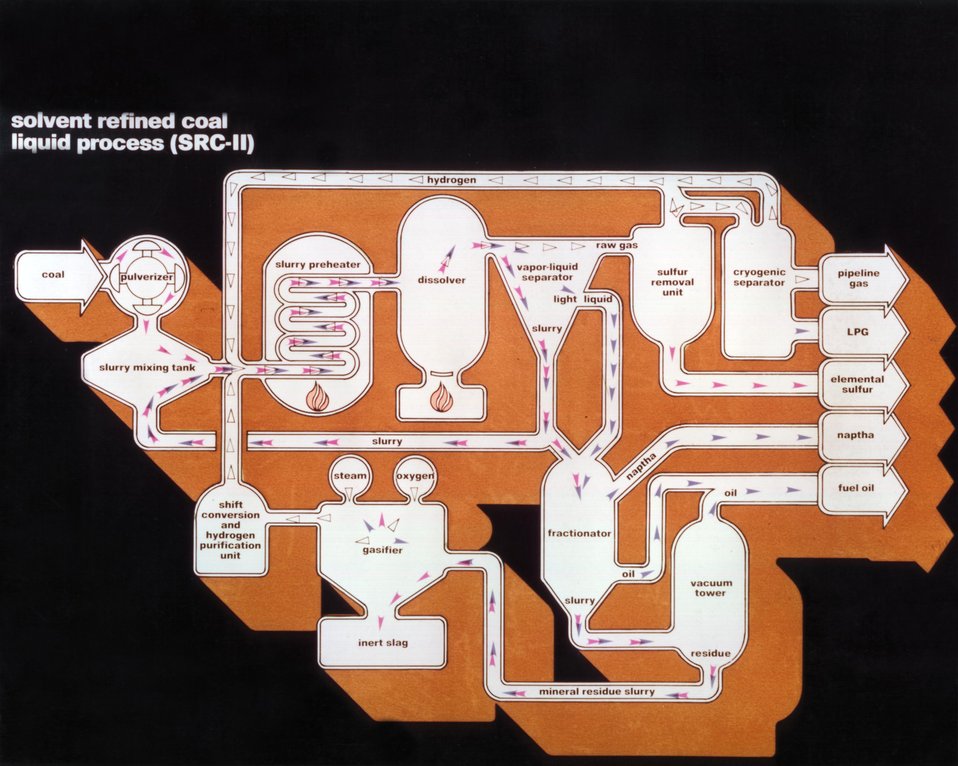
SCHEMATIC ILLUSTRATION OF THE SOLVENT REFINED COAL - II (SRC-II) PROCESS.